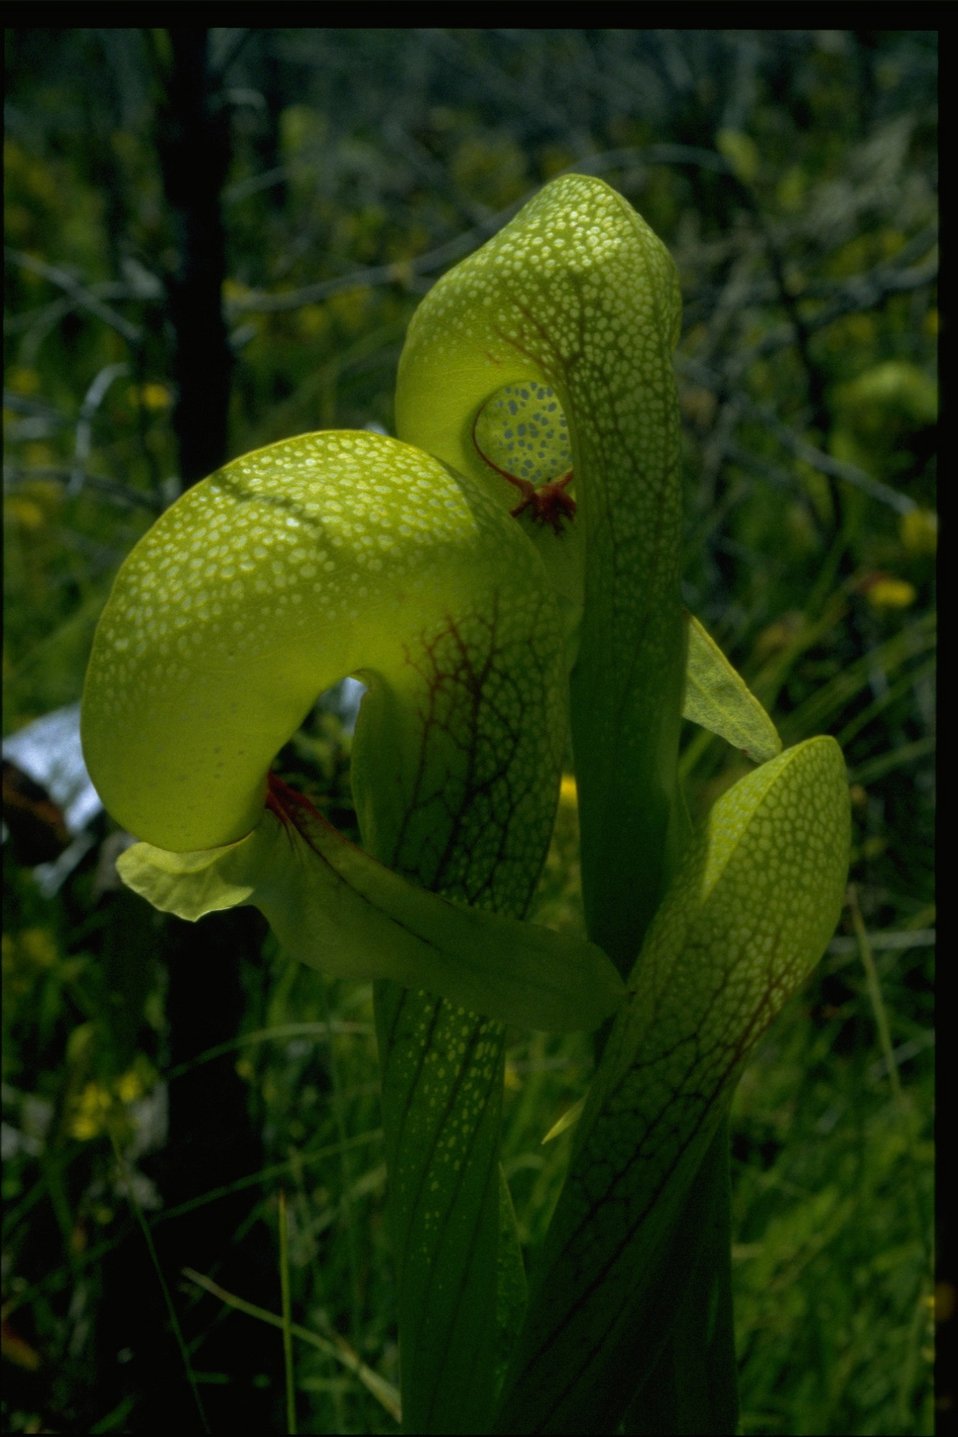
Closeup shot of Cobra Lily, Darlingtonia californica.